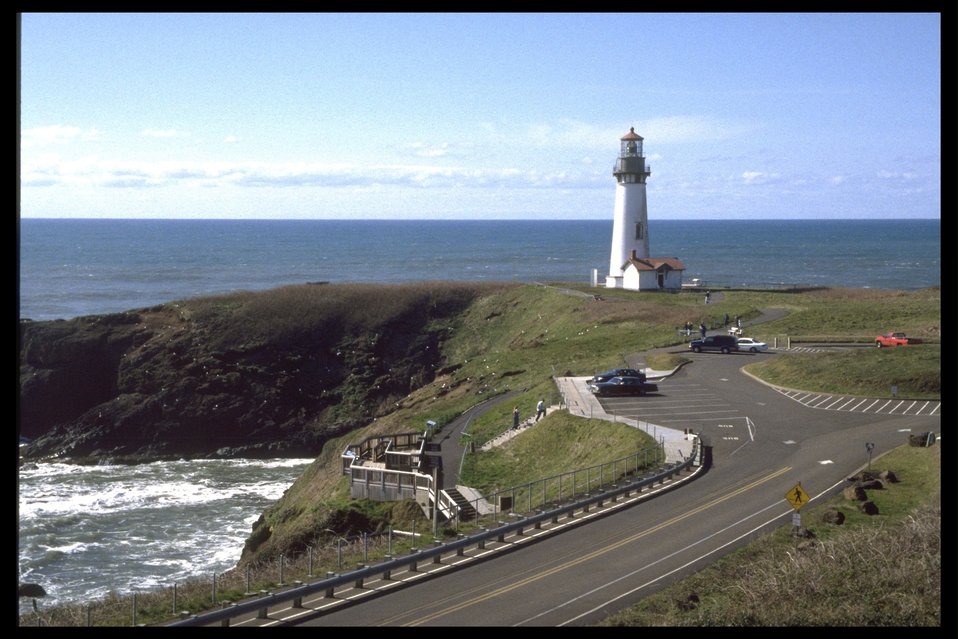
Yaquina Head Lighthouse.